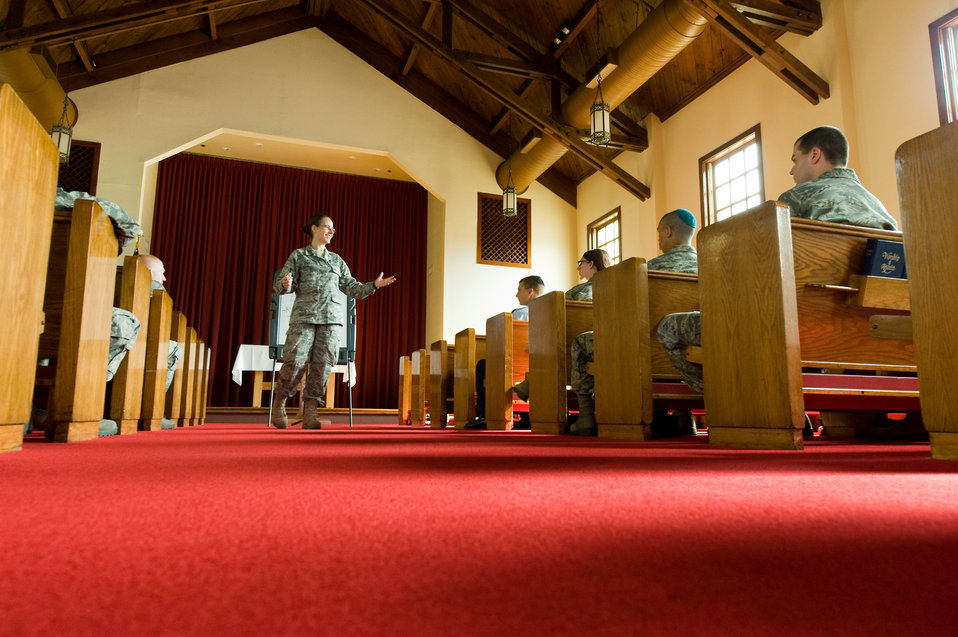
U.S. Air Force Chaplaincy

U.S. Air Force Rabbi, Chaplain, Captain Sarah D. Schechter leads the evening le'il shabbat service on Friday, Sept. 4, 2009 at Lackland Air Force Base's Airmen Memorial Chapel. The more than 25 basic military trainees and other attendees participated in a religious education class that taught them how to prepare for Jewish New Year, Rosh Hashanah. This was followed by the Ma'ariv prayer service for the setting of the sun, and then a meal provided by lay leaders supporting the service. Because of training schedules some ceremonies and events are earlier than traditionally held. By order of commanders, those who want to attend any or all religious services of their choosing are given full permission and opportunity to do so. Chaplain, Captain Schechter is an Operation Iraqi Freedom veteran and considers her deployment there to be one of the highlights of her career. Schechter is the first woman rabbi in the U.S. Air Force.